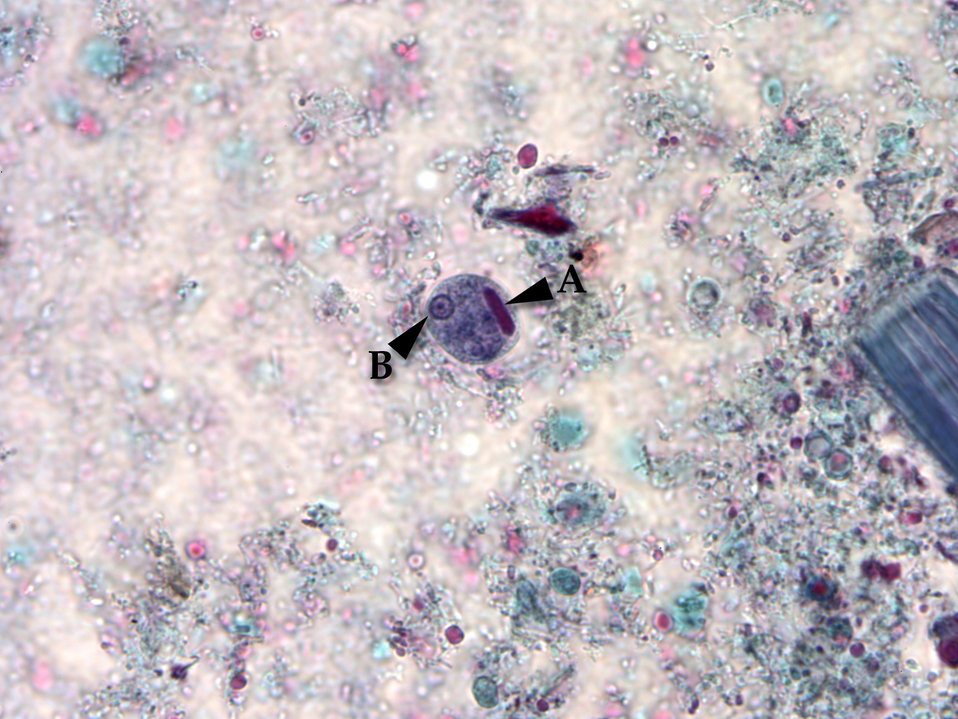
Using a trichrome stain, this photomicrograph depicted a cyst of the single-celled parasite, Entamoeba histolytica. Stained a blue color, the cyst, see here in the center of the micrograph, is one of the life cycle phases through which a protozoan organism passes as it matures. In this phase, due to the protective cyst wall, the organism is extremely resilient to the elements and is able to survive from days to weeks in the external environment. The cyst represents the highly infective phase of the life cycle. Note the presence of an elongated, blunt ended chromatoid body within the cyst 'A'